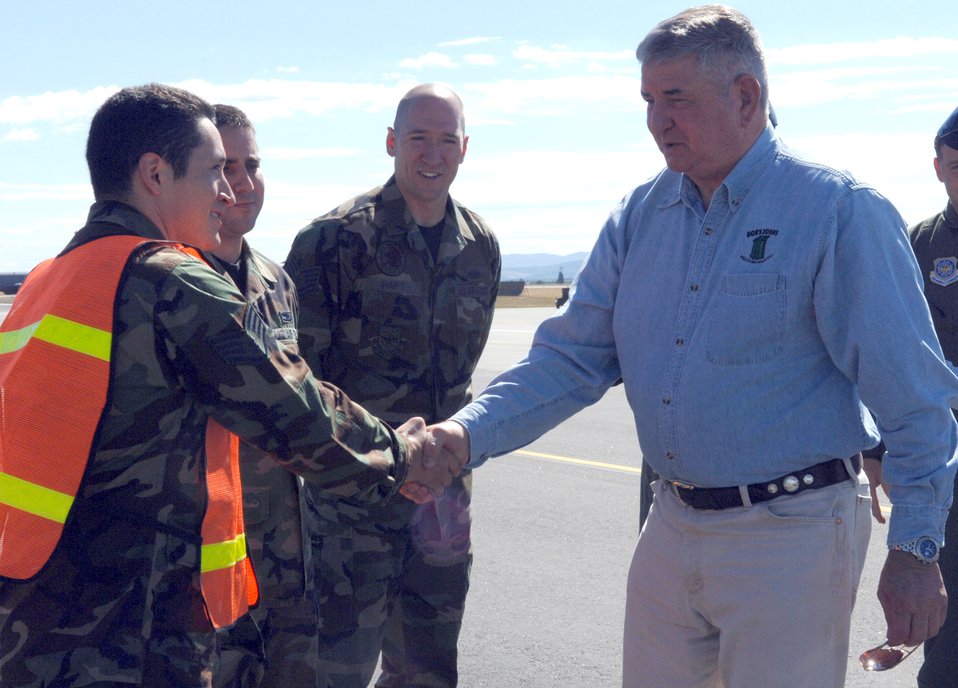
Gen. Fogleman visits Fairchild, praises AMC

Retired Gen. Ronald R. Fogleman, former Air Force chief of staff, greets Airmen upon his July 24 arrival to Fairchild Air Force Base, Wash. The general, who served on active duty for 34 years, was a guest speaker at the base's 60th Anniversary Speakers Symposium July 24. He also spent time talking to wing leaders about the dynamics of command before leaving the base July 25.